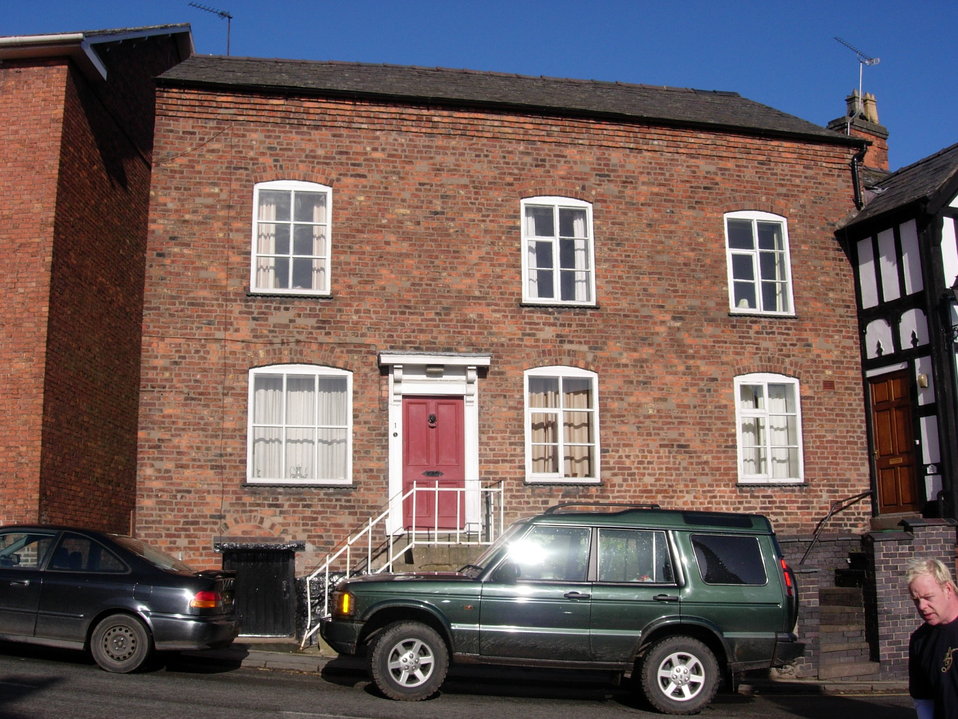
1 Church Street Malpas Russ McGinn